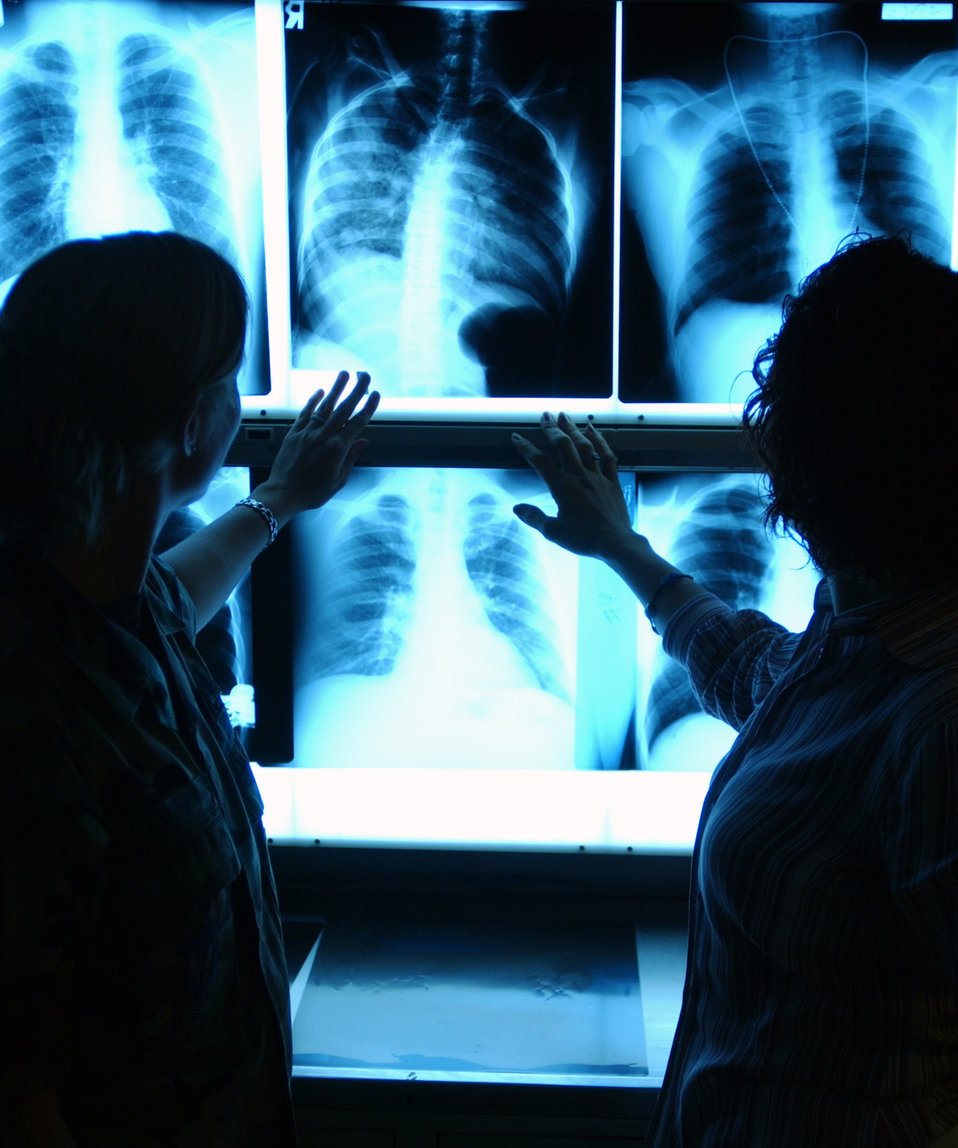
Bone business

INCIRLIK AIR BASE, Turkey -- Staff Sgt. Vicki Cryer (left) and Dr. Derya Sire discuss a chest X-ray. Cryer is radiology technologist assigned to the 39th Medical Group. Sire is a Turkish radiologist who works part time here.